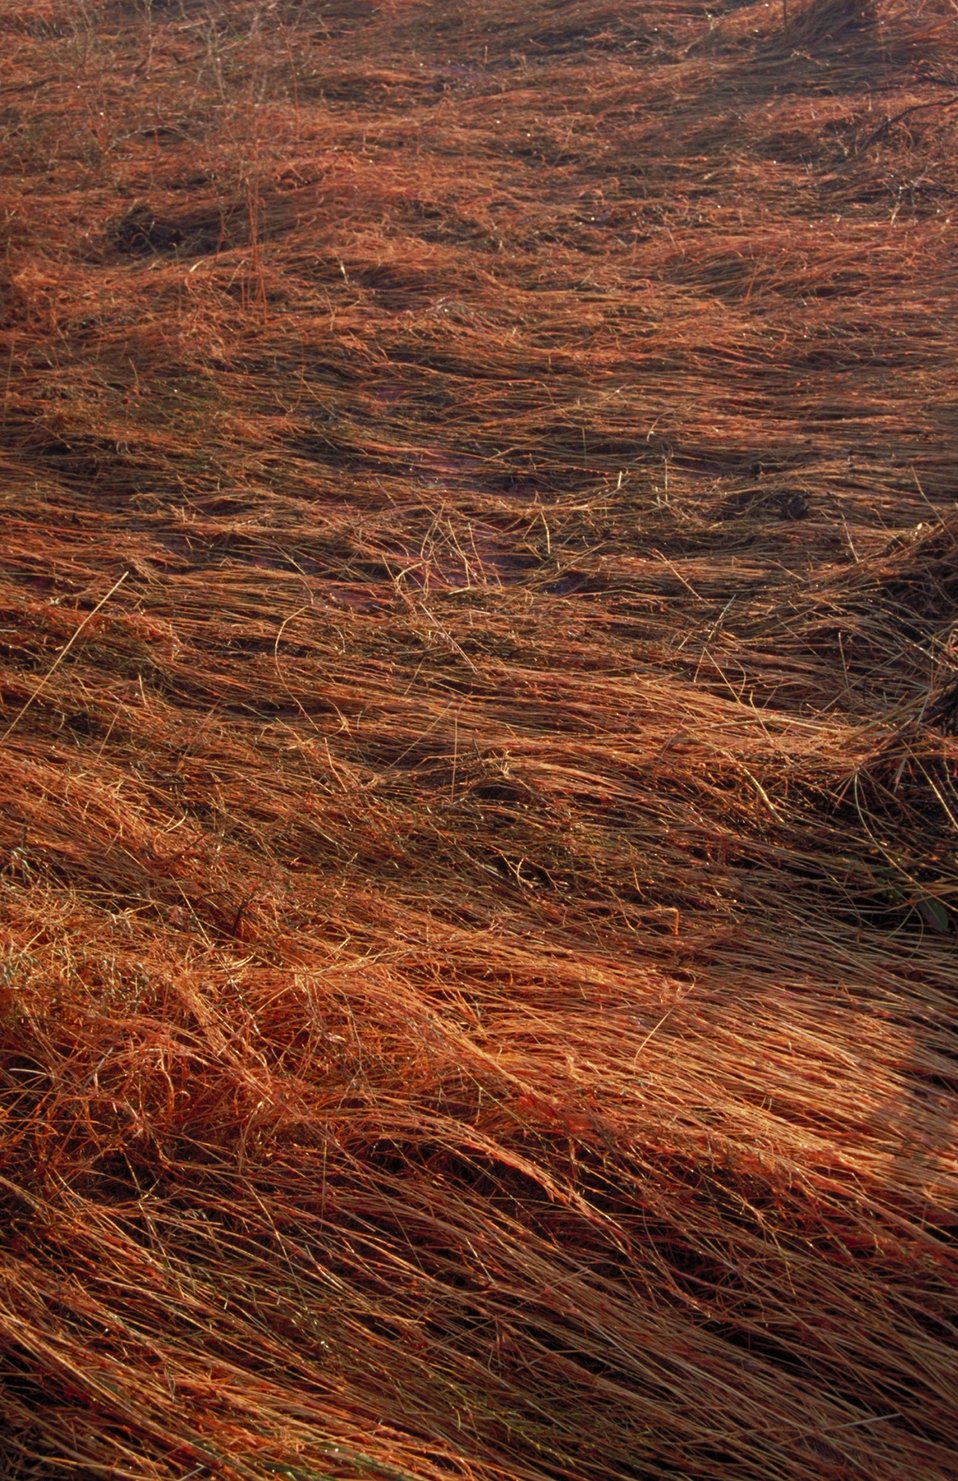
Fuels or grass Fire Season 2000 Lower Snake River District LSRD